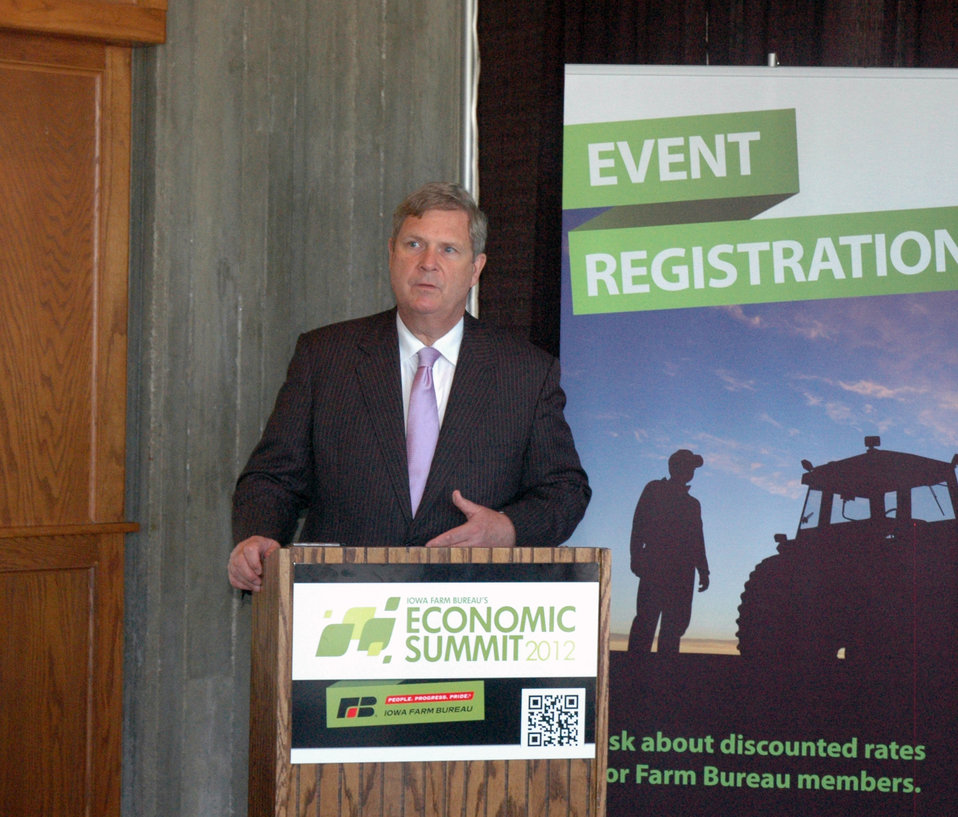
Agriculture Secretary Tom Vilsack addressed more than 200 attendees at the Iowa Farm Bureau’s 2012 Economic Summit meeting in Ames, Iowa, on Tuesday, July 24, 2012. The Secretary talked about pillars that are vital to the revitalization of rural America including the role production agriculture plays in expanding ag exports, the growth of the bio-based economy, the expansion of local and regional food systems and how conservation programs can enhance outdoor recreation activities.